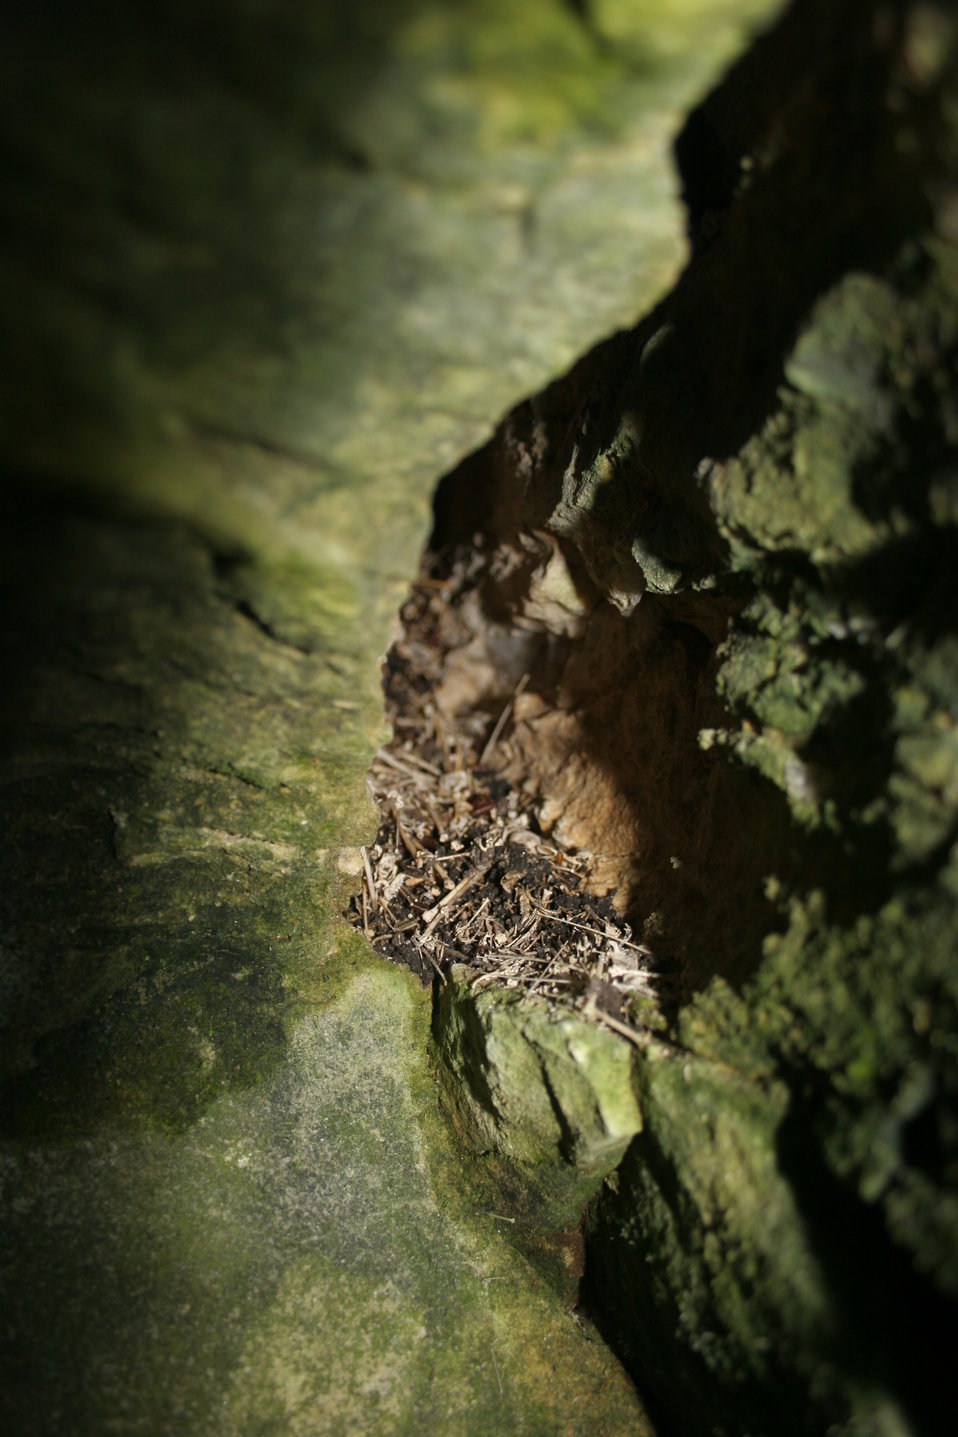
Bat bones outside cave entrance

Bat bones fill crevices outside Mt Aeolus Cave. The cave, once home to over 300,000 bats, has been devastated by white-nose syndrome.